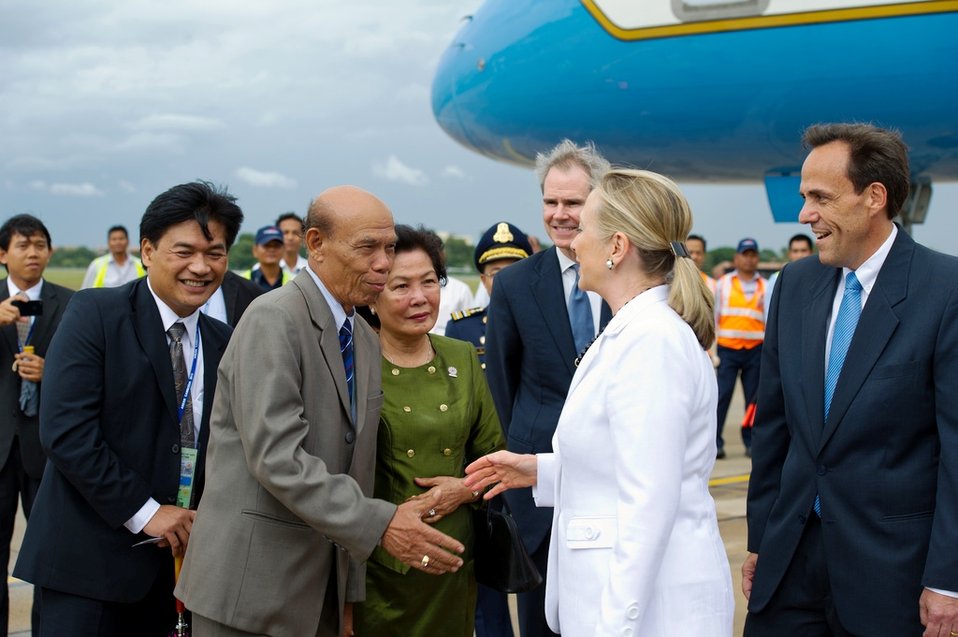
Secretary Clinton Is Greeted By Cambodian Officials

U.S. Secretary of State Hillary Rodham Clinton is welcomed by Cambodian officials to Phnom Penh, Cambodia, on July 11, 2012.